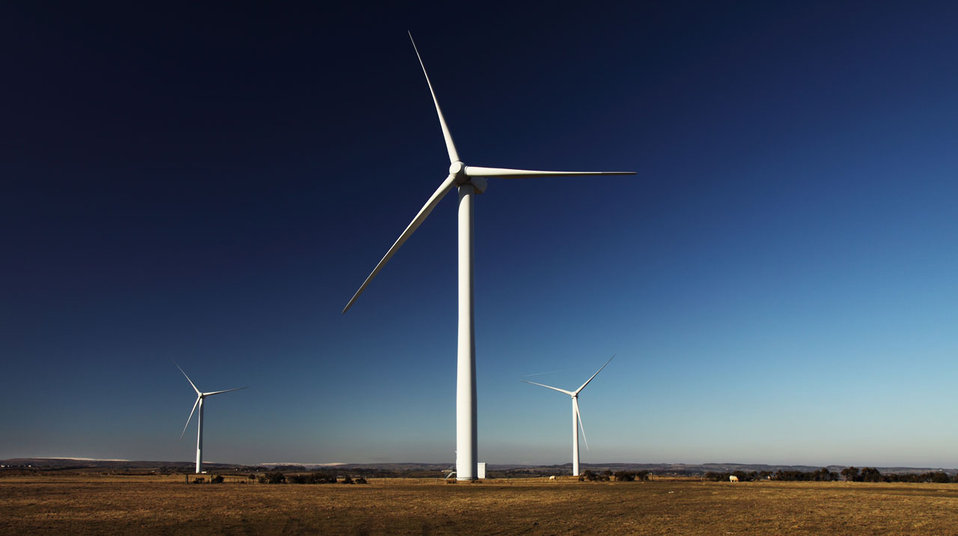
Three wind turbines on sunny day.